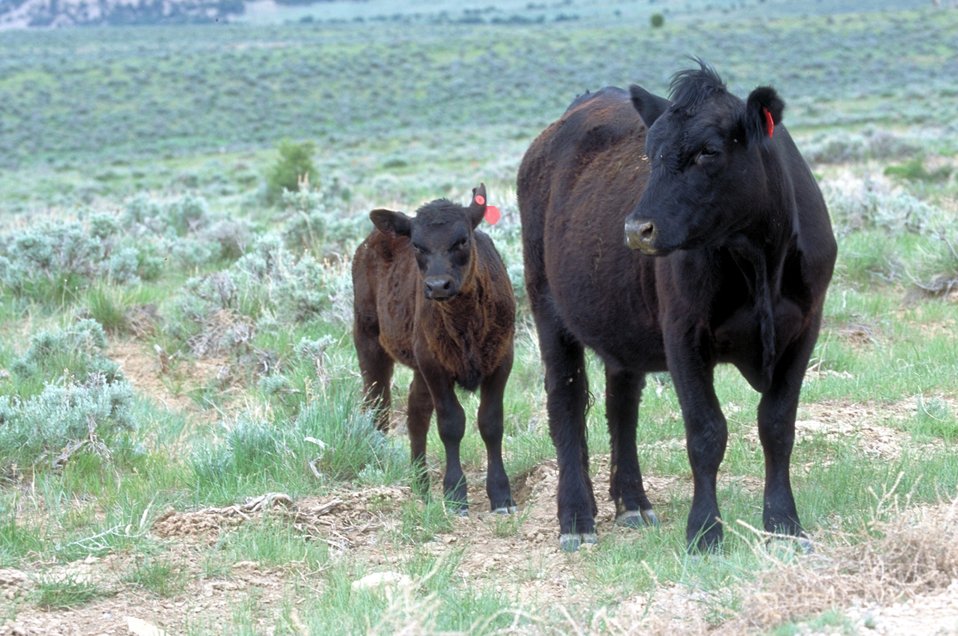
Livestock grazing on BLM lands near Price, Utah.